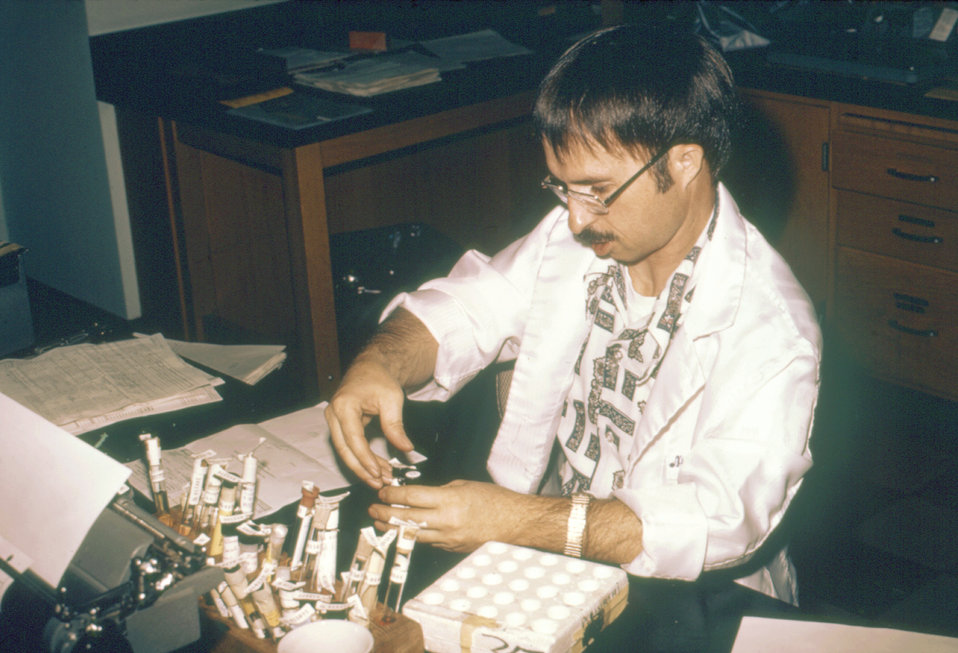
This is a photograph of laboratorian David McLaughlin, formerly of the CDC's Mycology Division, Bureau of Labs.